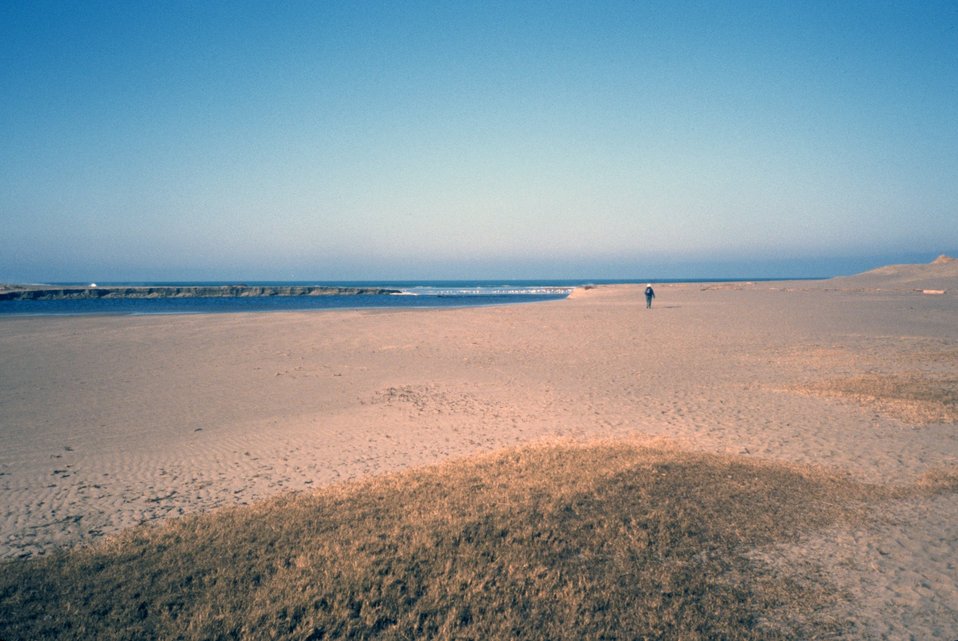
Point Reyes Great Beach